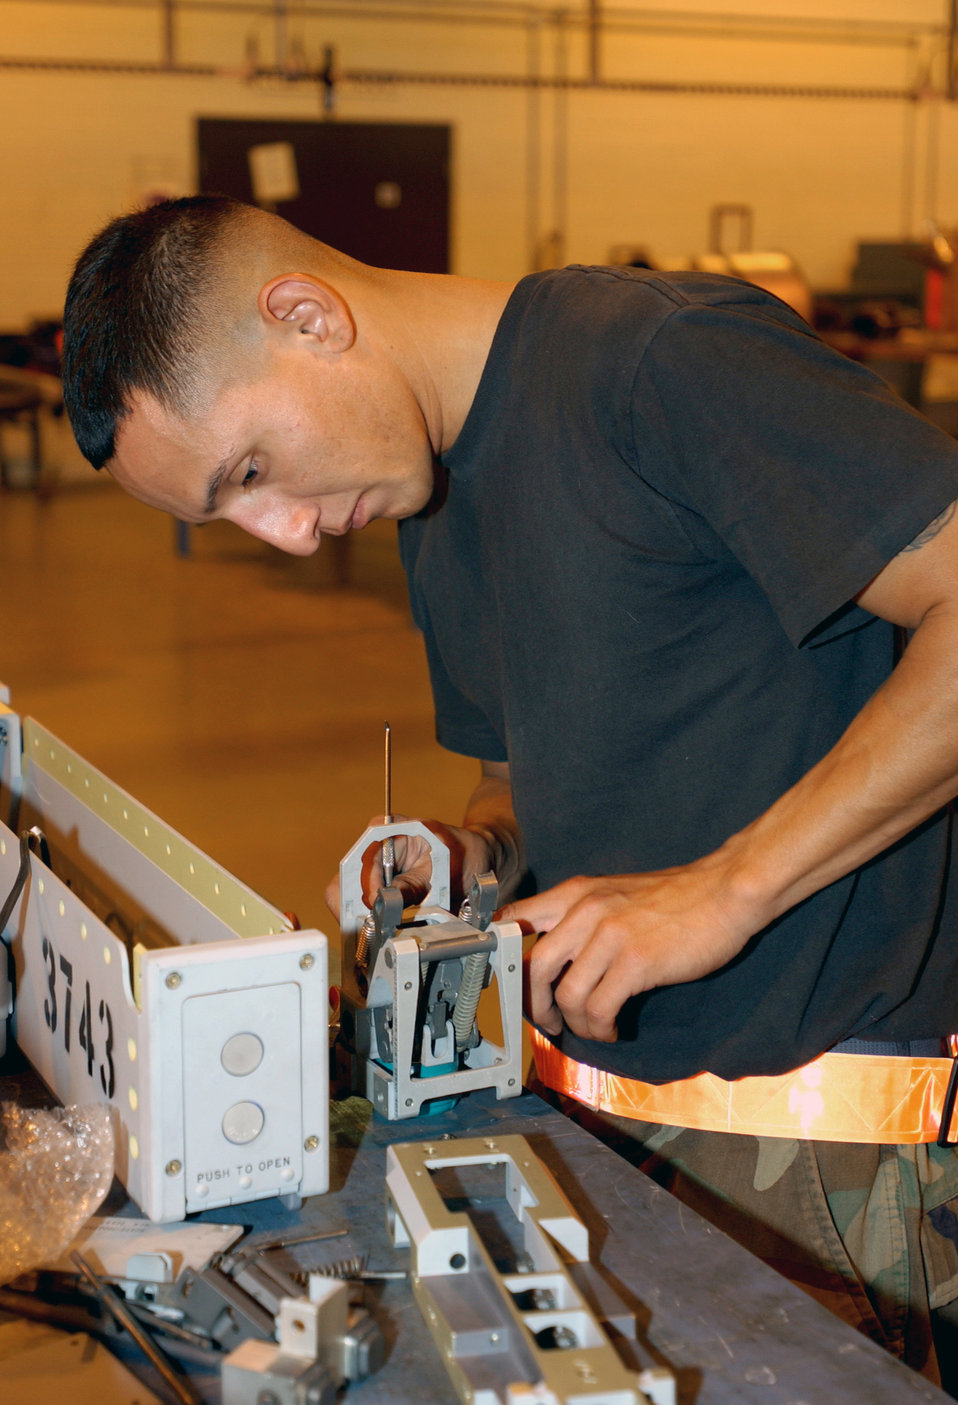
Umbilical fix

ROYAL AIR FORCE LAKENHEATH, England -- Senior Airman Rob Abolos works on an umbilical receptacle for an F-15E Strike Eagle here April 7. The umbilical receptacle passes guidance and control data between the cockpit control systems and the weapons before it launches from the aircraft. Airman Abolos is an armament systems journeyman with the 48th Munitions Squadron here.